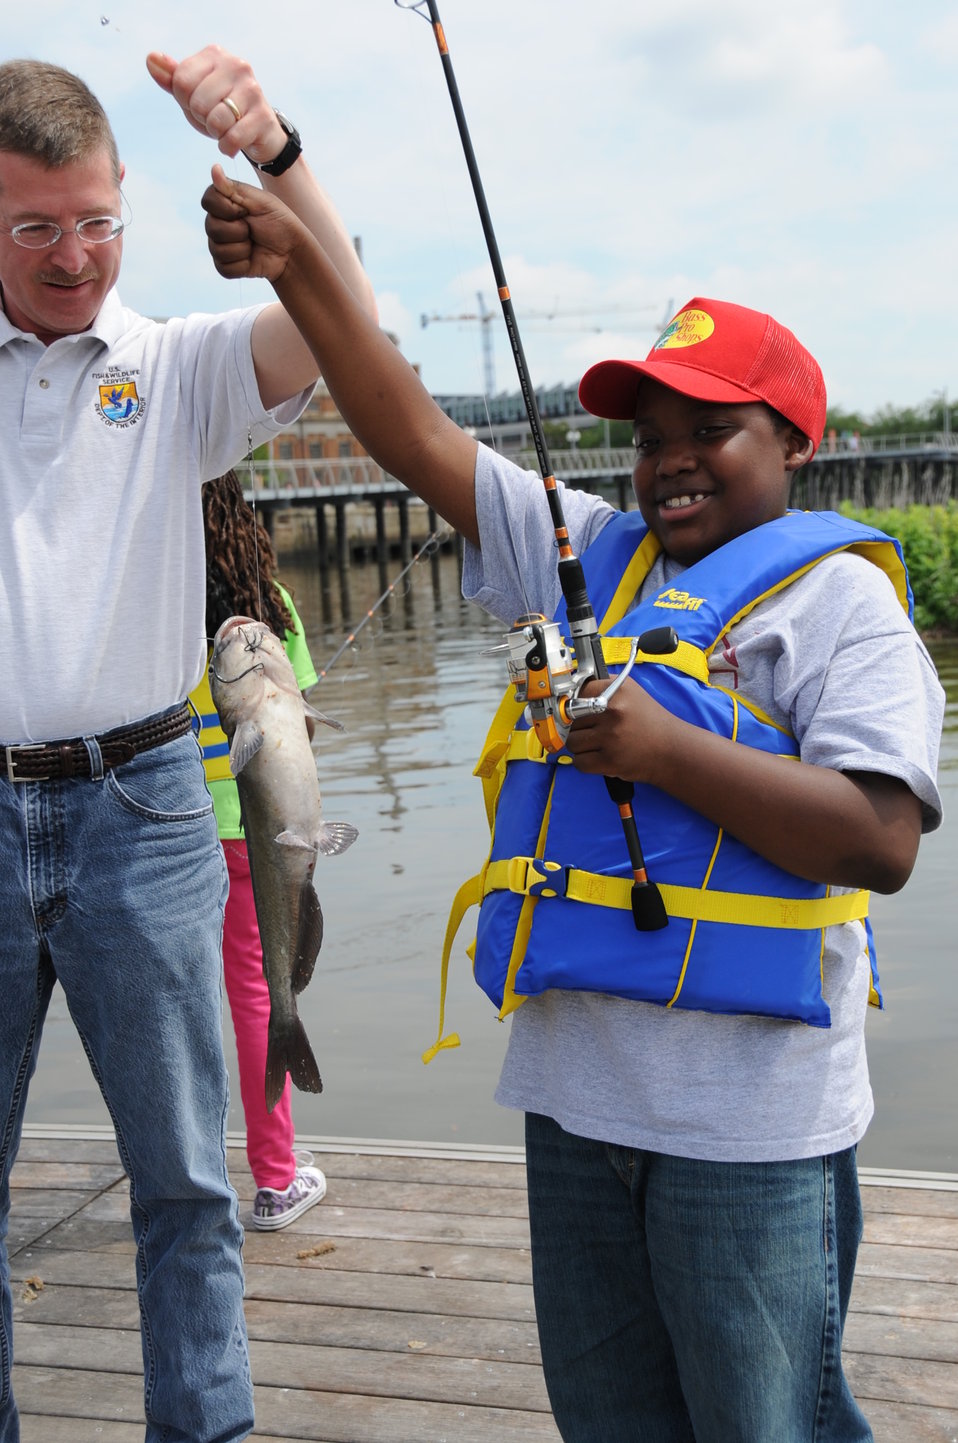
2013 National Fishing and Boating Week

Local students prepare to enjoy fishing at the annual kick-off of National Fishing and Boating Week on the Anacostia River in Washington D.C.